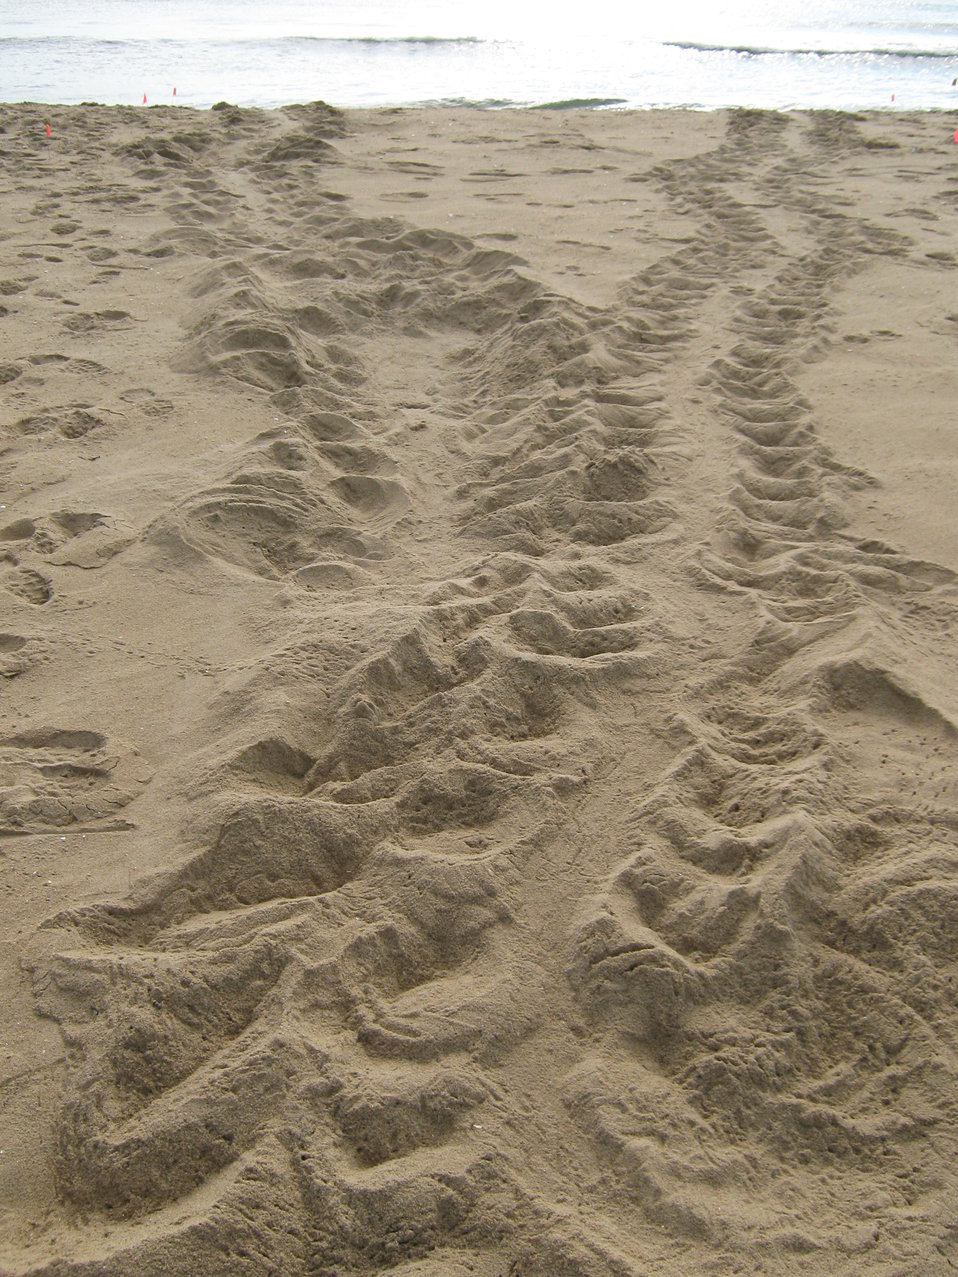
Sea turtle crawl at Back Bay National Wildlife Refuge in Virginia.